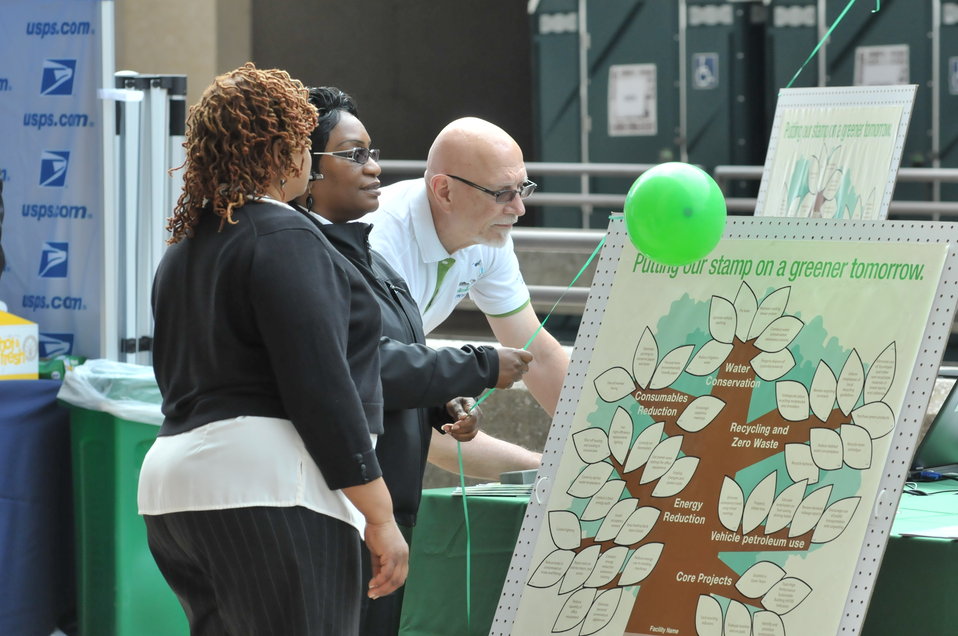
U.S Postal Services introduces a new Global: Sea Surface temperatures forever stamp at the Earth Day program at Department of Energy on April 22, 2014.